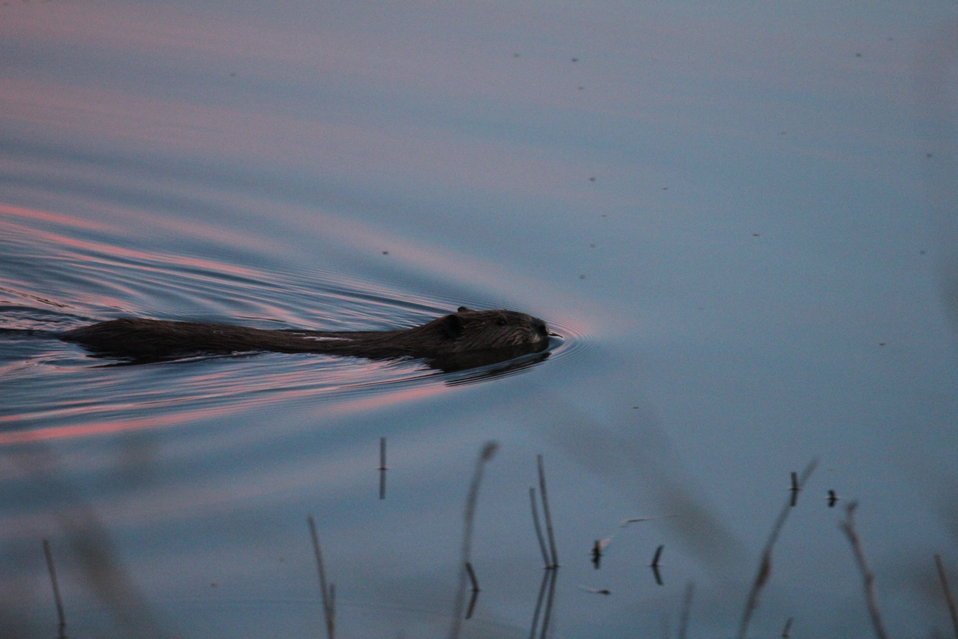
Beaver on Des Lacs Refuge

Did you know?

Beavers are known for their alarm signal: when startled or frightened, a swimming beaver will rapidly dive while forcefully slapping the water with its broad tail, audible over great distances above and below water. This serves as a warning to beavers in the area. Once a beaver has sounded the alarm, nearby beavers will dive and may not reemerge for some time. Beavers are slow on land, but are good swimmers, and can stay under water for as long as 15 minutes.